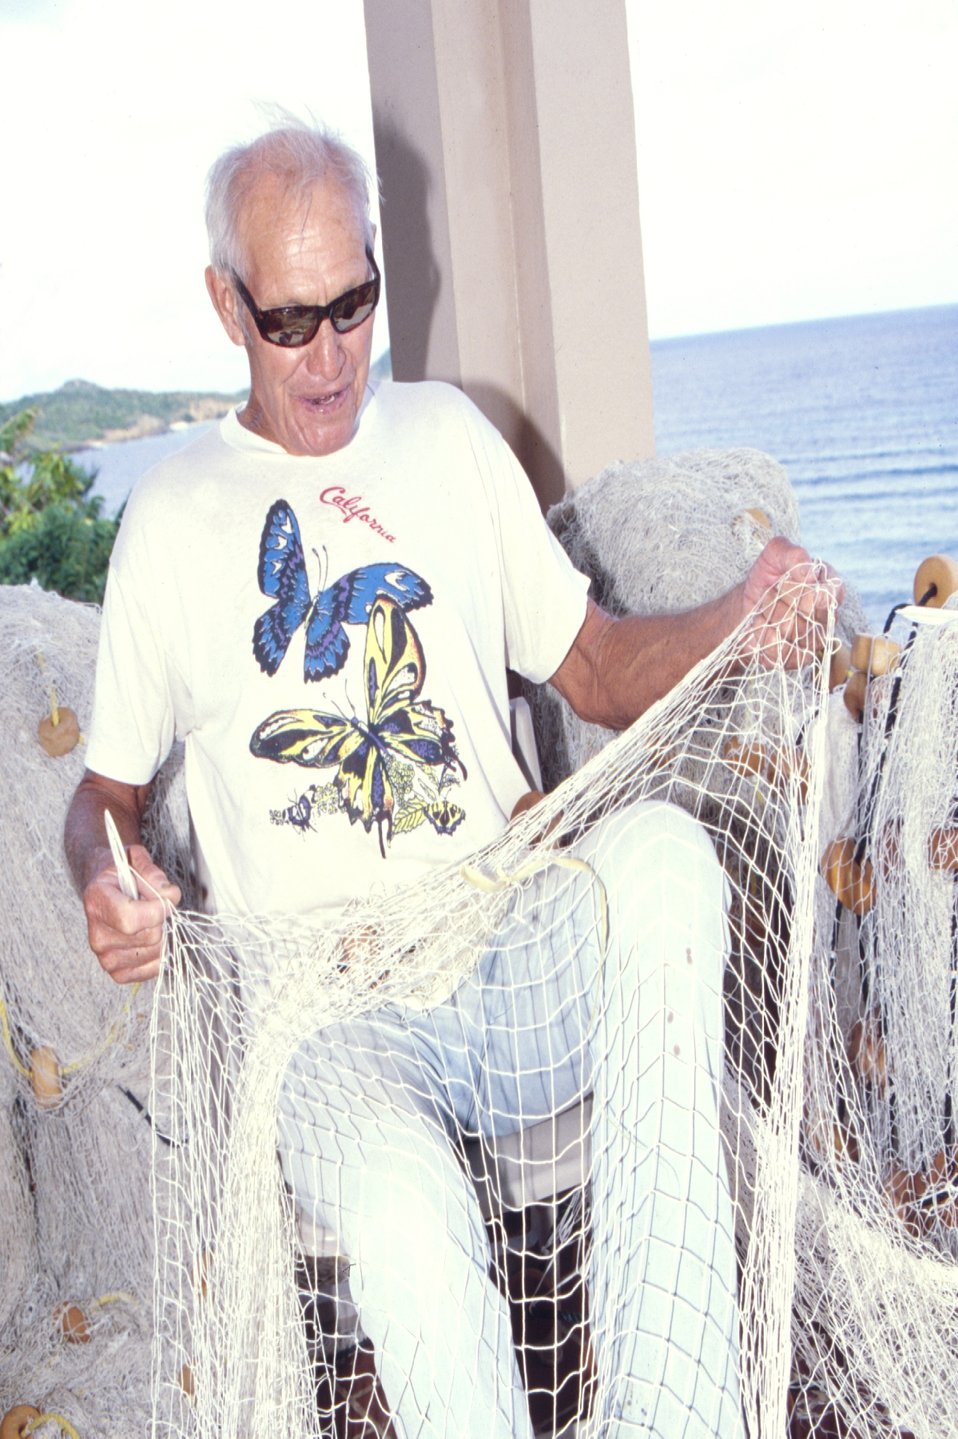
Joe LaPlace mending a net at St. Thomas, U.S. Virgin Islands.